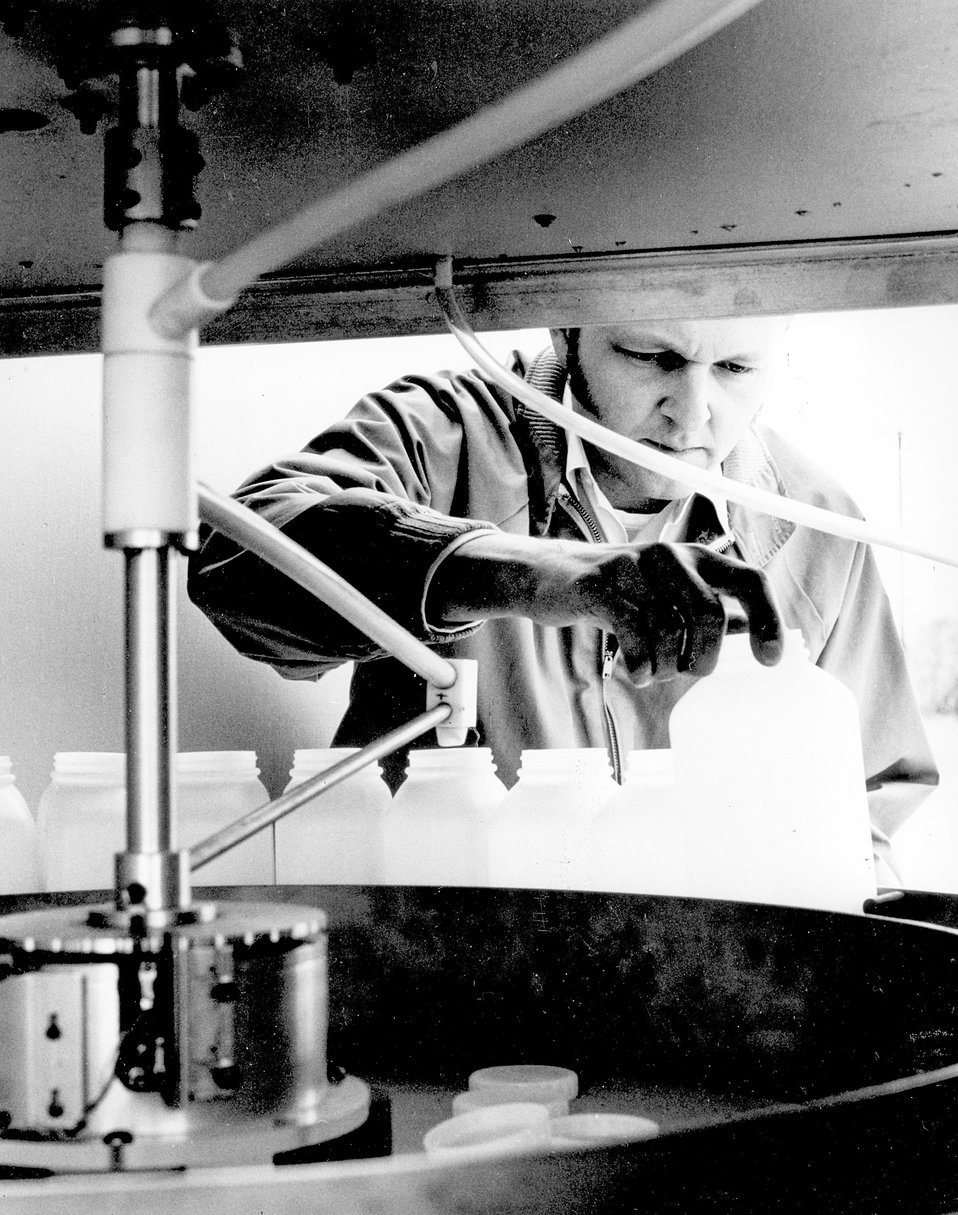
An Argonne meteorologist places sample container in an automated rain collector.
c.1970